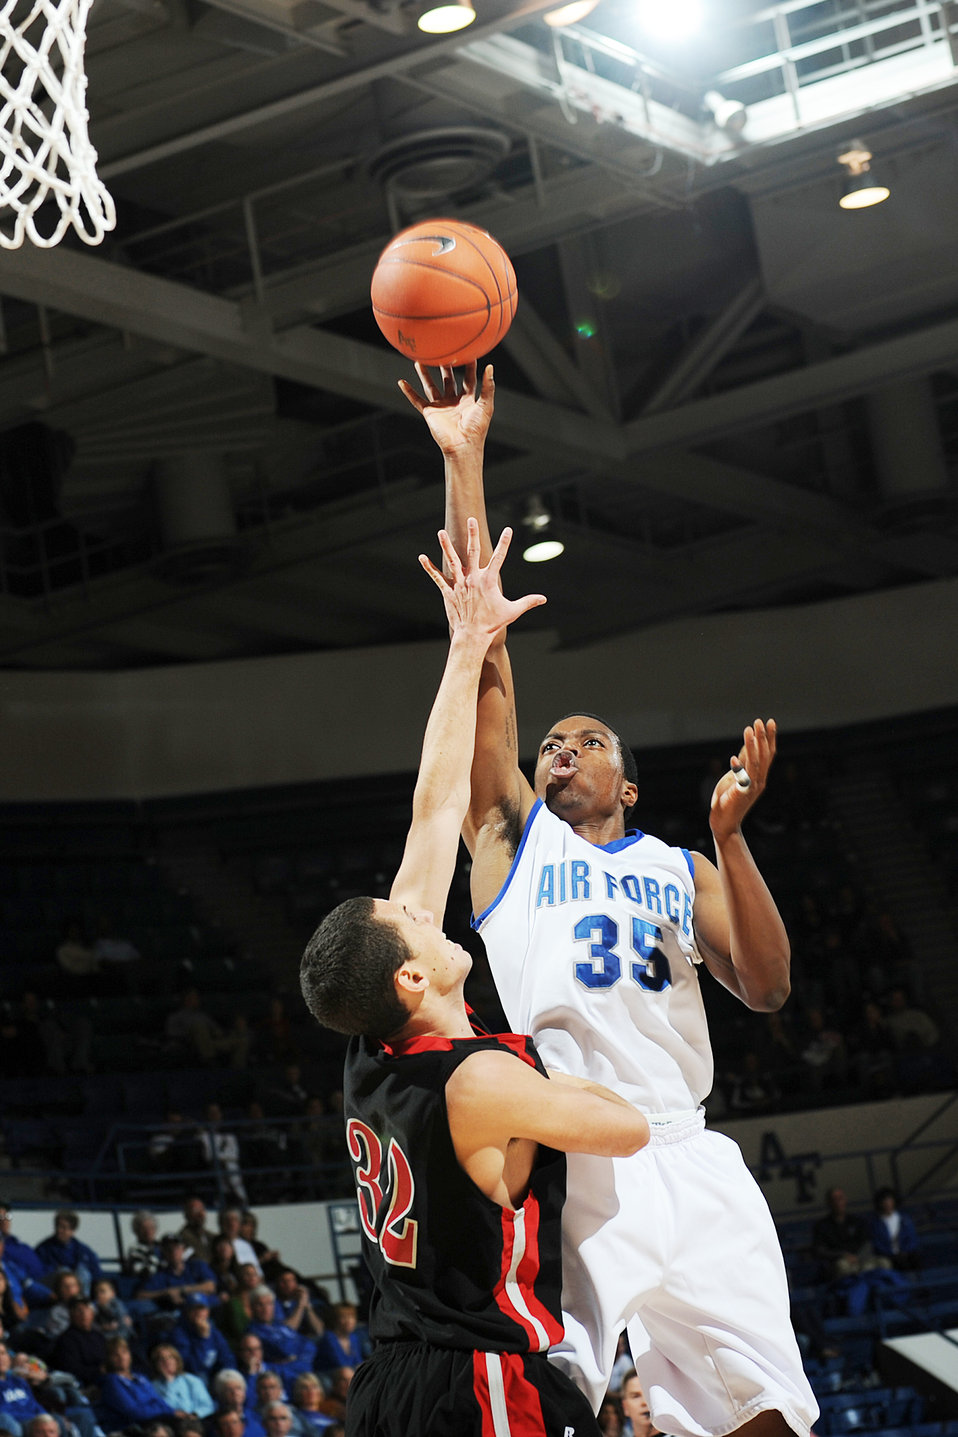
Falcons reign supreme in season opener

Western State defender Martin Graham attempts to block a shot from U.S. Air Force Academy Falcon junior guard Evan Washington during the season opener Nov. 13, 2009 in Clune Arena at the U.S. Air Force Academy, Colo. Washington contributed 14 points as Air Force beat the Mountaineers 65-54.